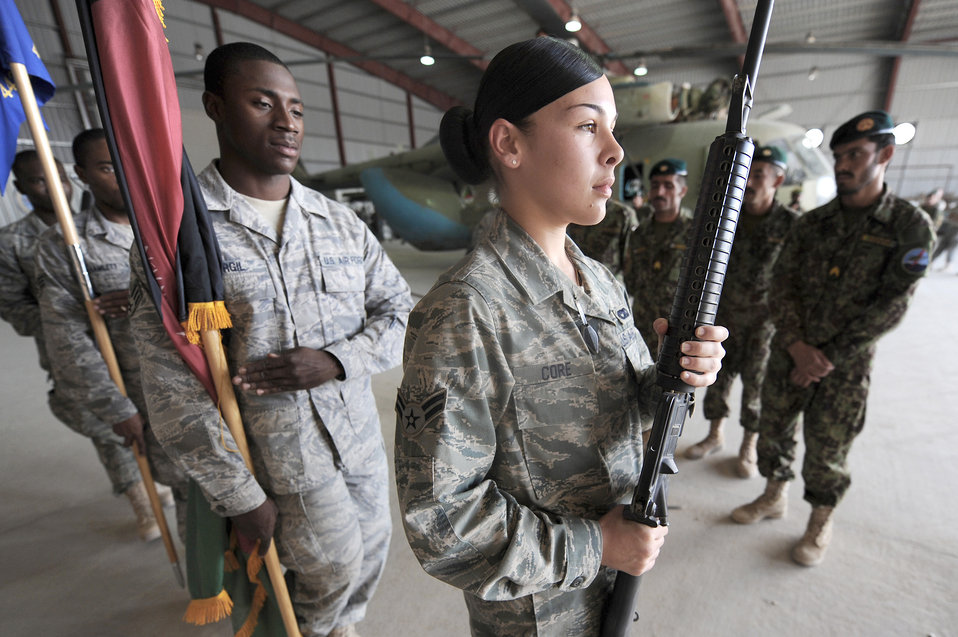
Afghan honor guard

Members of the 451st Air Expeditionary Wing Honor Guard demonstrate how to post colors Oct. 3, 2010, at Kandahar Airfield, Afghanistan. The 451st AEW Honor Guard members worked with the Afghans to help them prepare their own Honor Guard for a ceremony marking the one year anniversary of the Kandahar Air Wing.